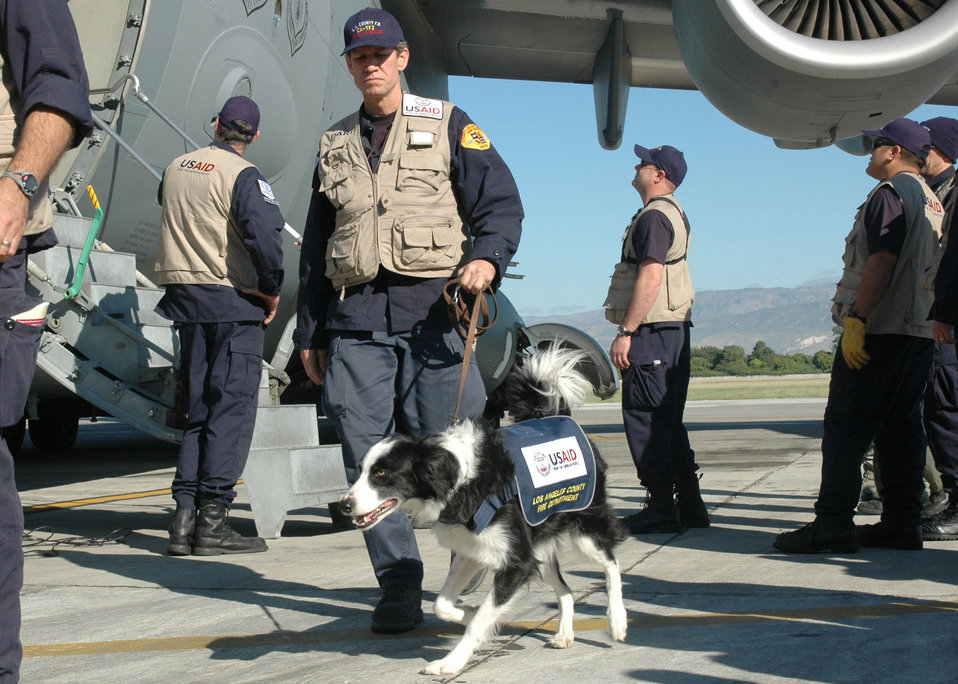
Airmen deliver urban search, rescue team to Haiti

Ron Wickbacher along with his dog, Dawson, prepare to load onto a C-17 Globemaster III on their way to Haiti Jan. 14, 2010, at March Air Reserve Base, Calif. Mr. Wickbacher is a canine search specialist from California Task Force 2, and Dawson is a live-scent dog trained for humanitarian search and rescue.